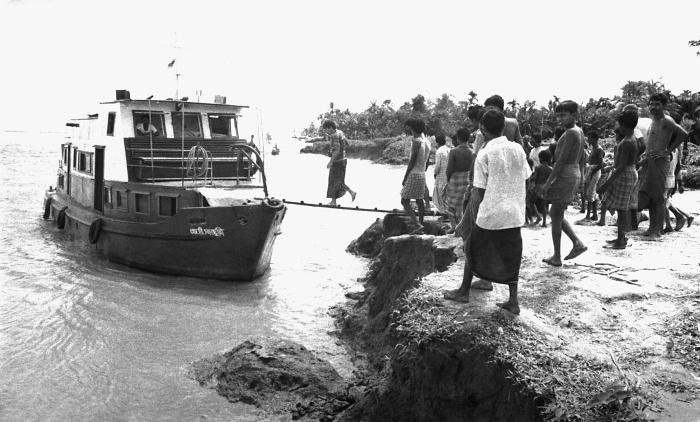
This image showed a converted Red Cross x-ray boat used to transport E.I.S. officers, and local public health personnel. 'In the towns of Barisal, Pirojpur and Patakali, a WHO team leader, and former CDC director, Dr. Jeffrey P. Koplan, remembers the period well. As a young E.I.S. officer in 1972, he was assigned to Dr. Stan Foster's team in Bangladesh, one of the last outposts of smallpox. His mode of transportation was a converted Red Cross x-ray boat, which enabled him and his Bangladeshi colleagues to quickly reach isolated populations to identify cases and control the spread of the disease.'This image was part of a series provided by Dr. Foster, and was one of a series entitled 'The Story of One Smallpox Jeep', which depicted the travails faced by the jeep, and its occupants of public health practitioners, as they road through the Bangladesh countryside in an attempt to eradicate smallpox from the country.